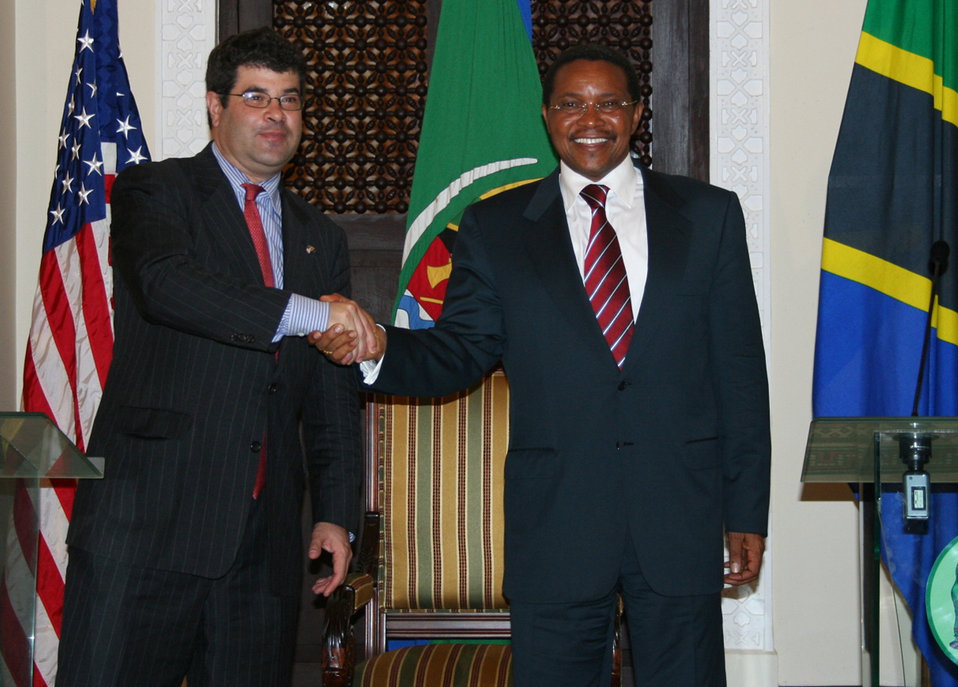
Deputy Secretary Neal Wolin’s trip to Africa 2009

Deputy Secretary Wolin meets with Tanzanian President Jakaya Kikwete to discuss efforts to reform the country’s investment climate and address the various growth challenges facing the nation.